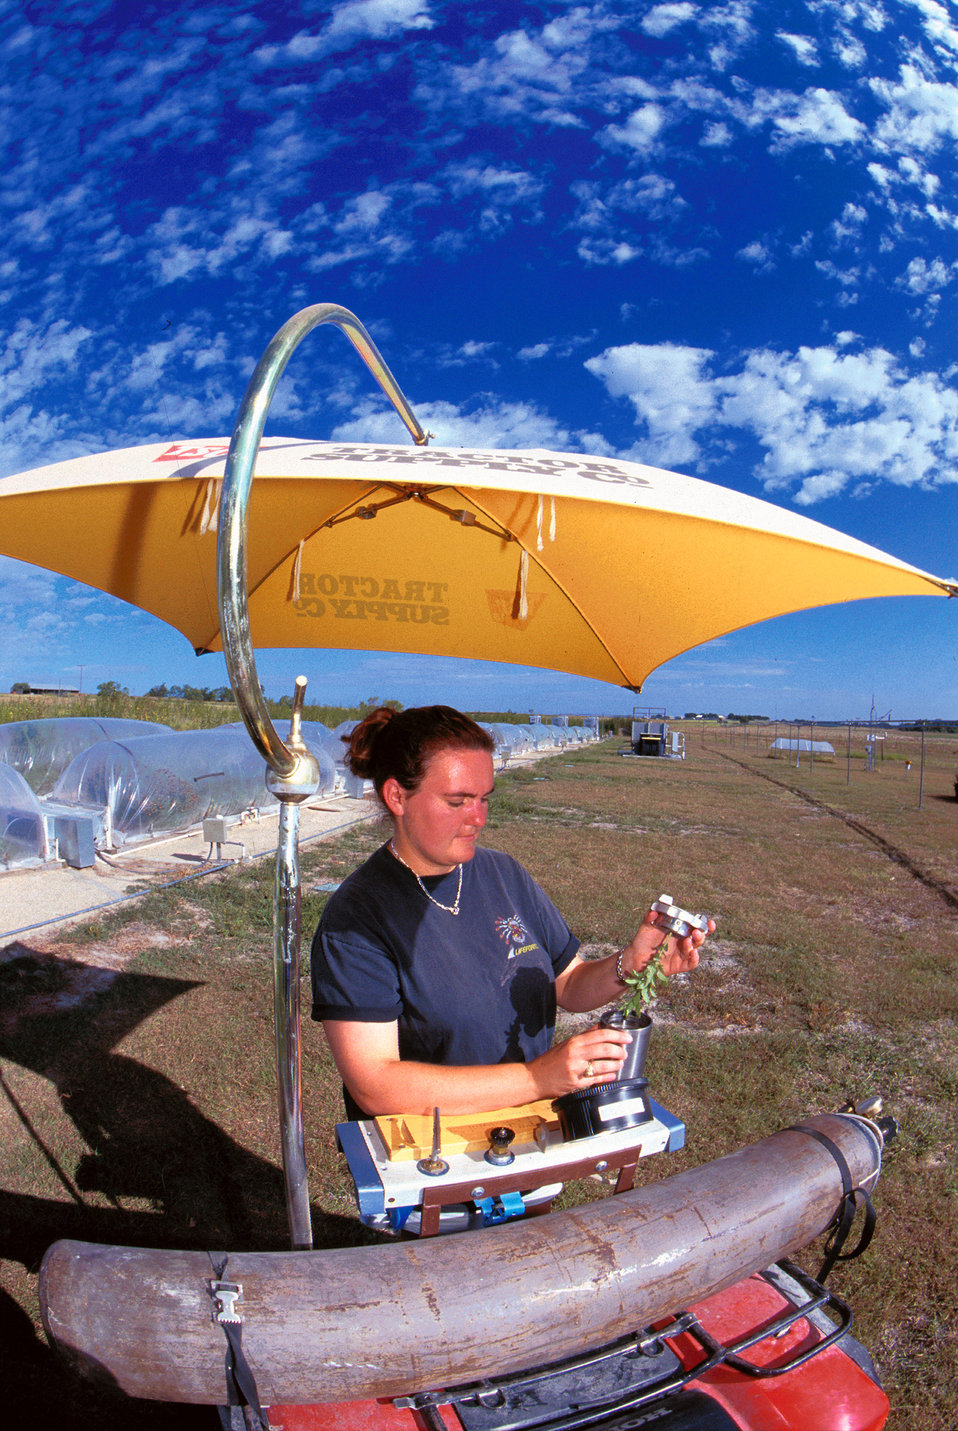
U.S. Department of Agriculture (USDA) Agricultural Research Service (ARS) biological science technician Katherine Jones uses a pressure bomb to compare water status of plants growing under varying levels of carbon dioxide in the experimental CO²-gradient tunnel system in Temple, TX.